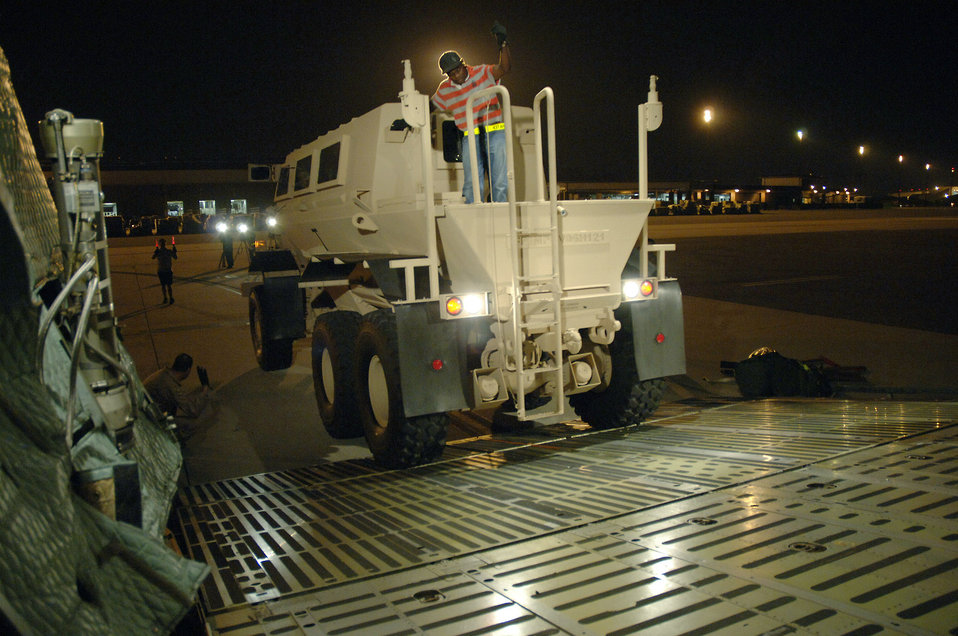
Airmen to deliver 10,000th MRAP to troops

Airmen load a mine-resistant ambush-protected vehicle onto a C-5 Galaxy Aug. 16, 2007, at Charleston Air Force Base, S.C. The C-5 is assigned to the 436th Airlift Wing Dover AFB, Del.